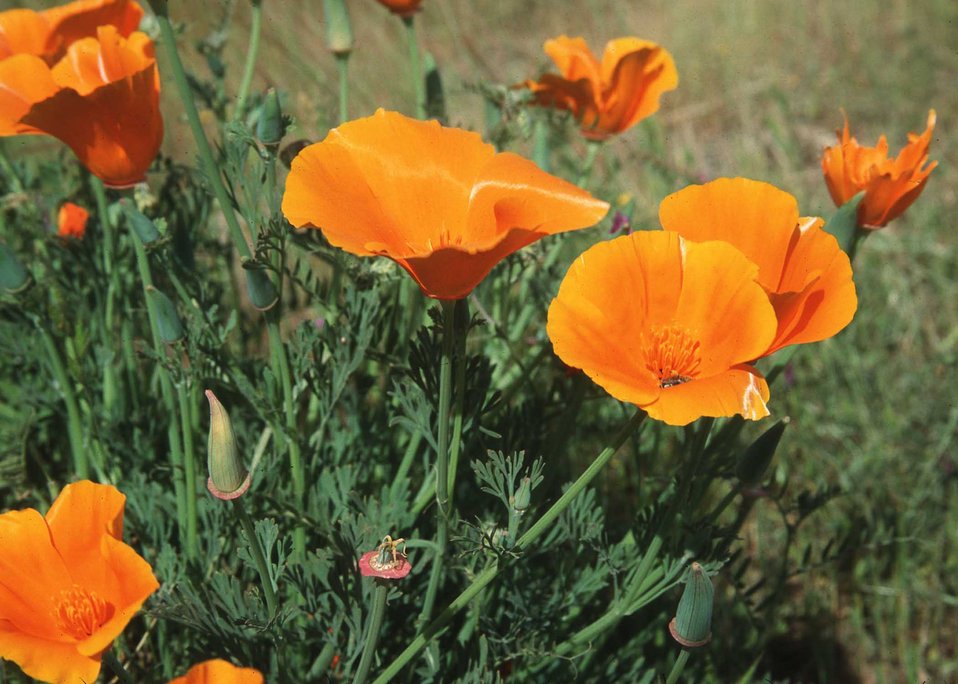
California poppy.